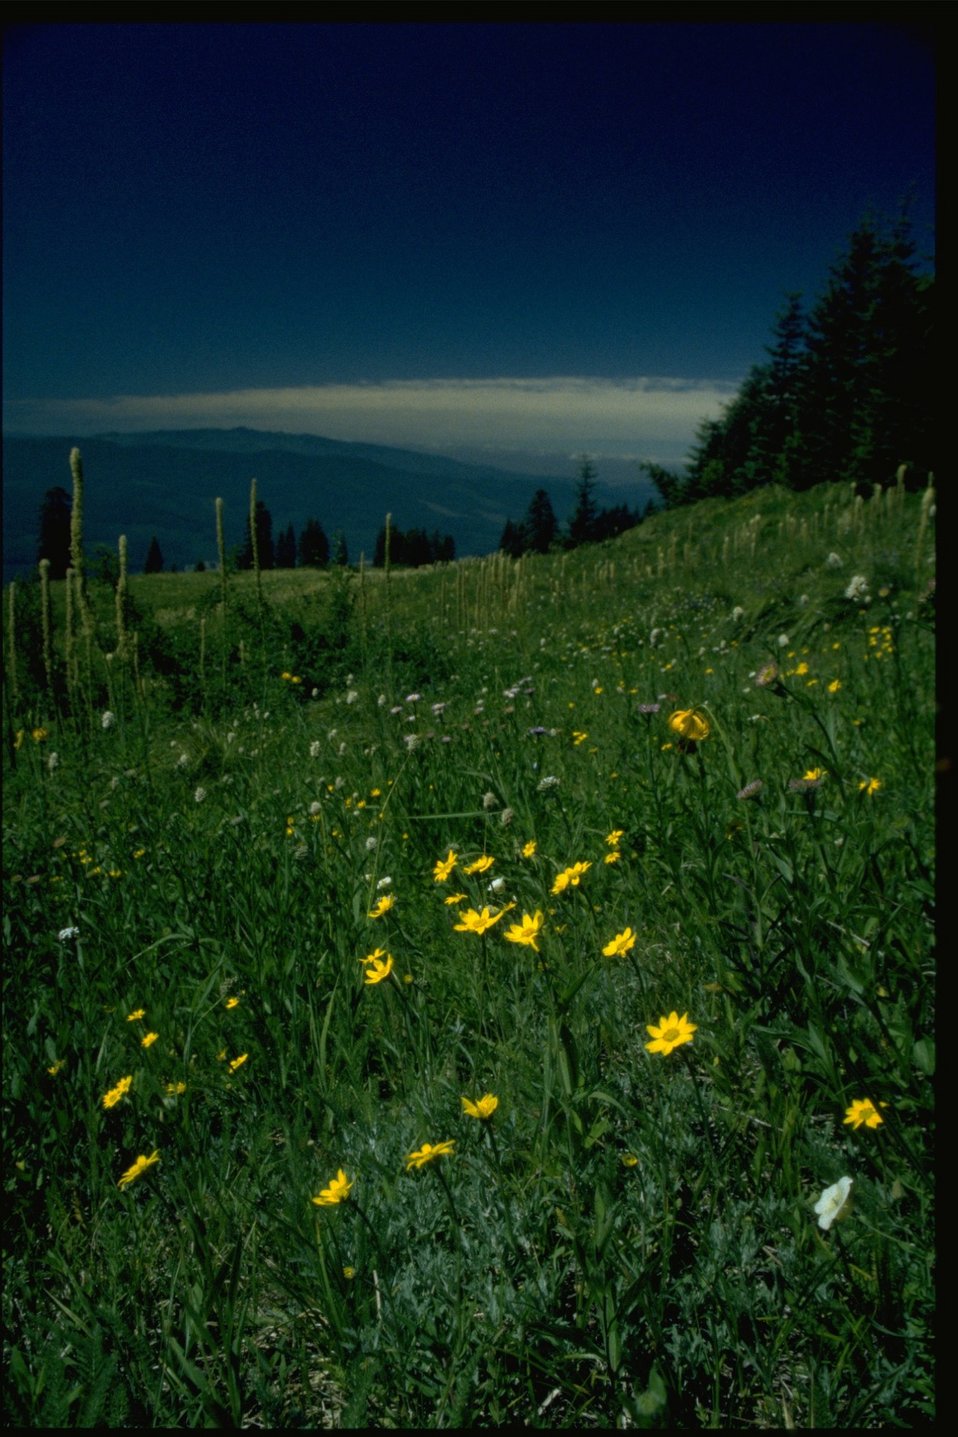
Scenic View, Meadow, Asteraceae polygonum bistortoides, Xenophyllum tenax.